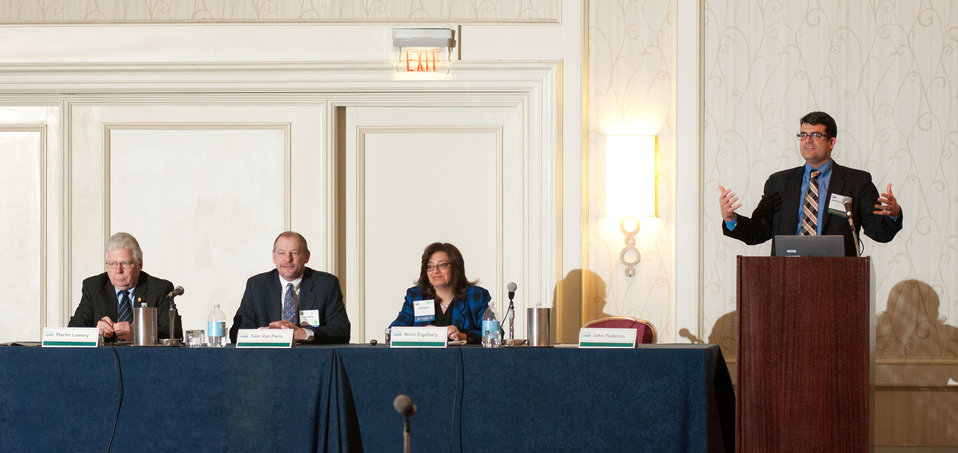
The U.S. Department of Agriculture (USDA) Rural Development Rural Utilities Service (RUS) Administrator John Padalino, right, moderates Energizing Rural Economies breakout session of the 2013 Agricultural Outlook Forum held at the Crystal Gateway Marriott Hotel in Arlington, VA on Friday, Feb. 22, 2013. The panel discussed the expanding capital available for rural investments that will help deliver the tools and technologies to meet energy, telecommunications, and business needs for the rural economy to grow. Rural Development programs and services can help rural consumers increase productivity, efficiency, and innovation, which can expand domestic an foreign markets, reduce costs, help diversify and strengthen rural economies.